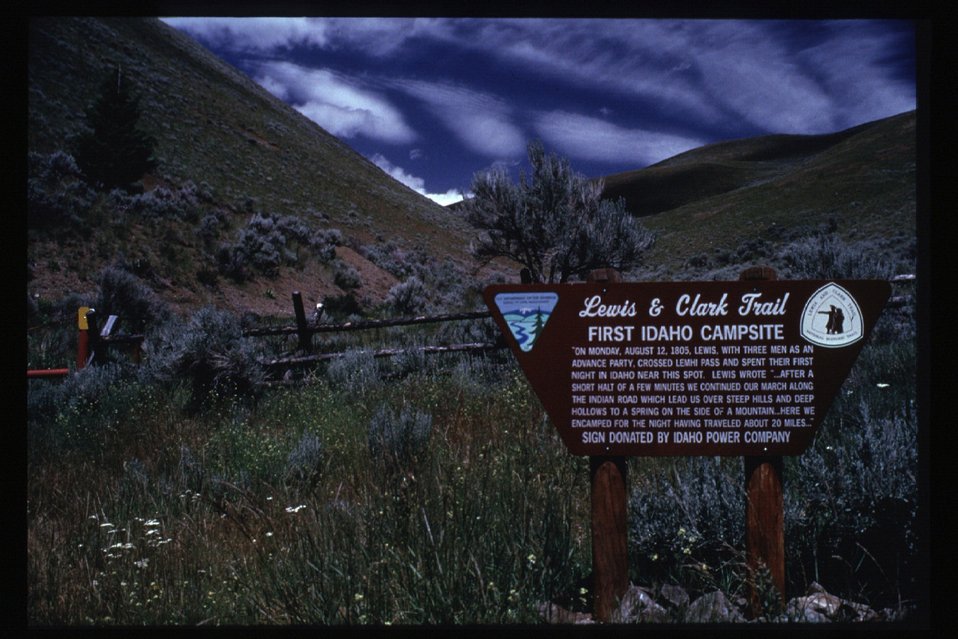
First Idaho Campsite Lewis and Clark National Historic Trail Salmon Field Office UCSC Upper Columbia Salmon Clearwater